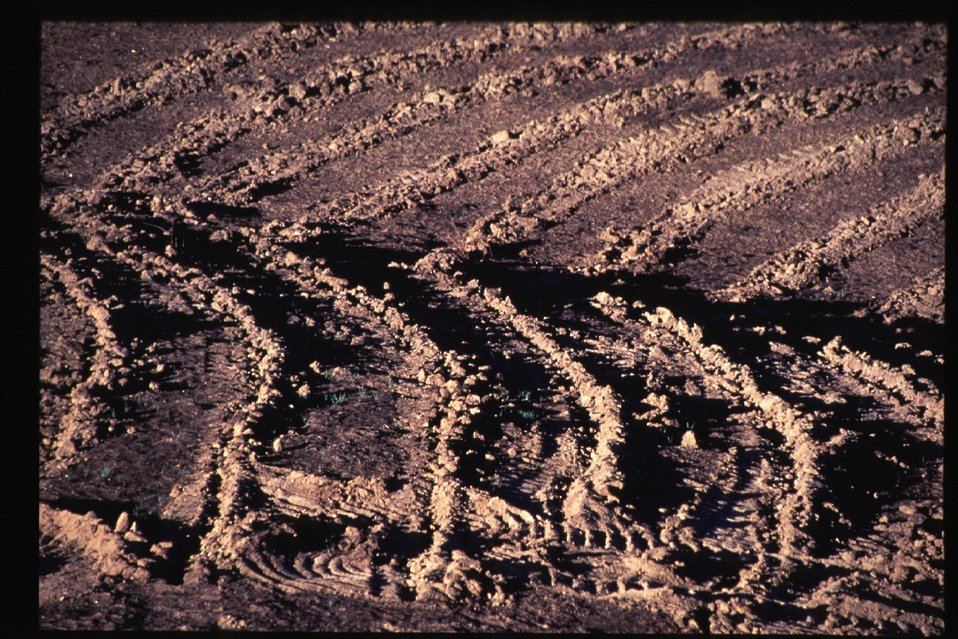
8th Street Fire Four Rivers Field Office LSRD Lower Snake River District